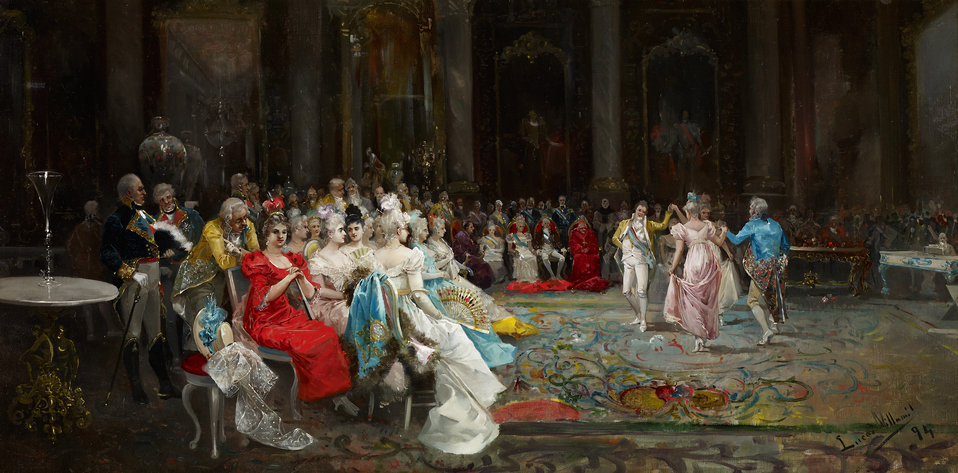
Dance at the Palace. Oil on canvas, 55 x 110 cm, Inv. CTB.1995.159 Museo Carmen Thyssen Native name Museo Carmen Thyssen Location Málaga, Spain Coordinates 36° 43′ 17″ N, 4° 25′ 22″ W Established 2011 Website www.carmenthyssenmalaga.org